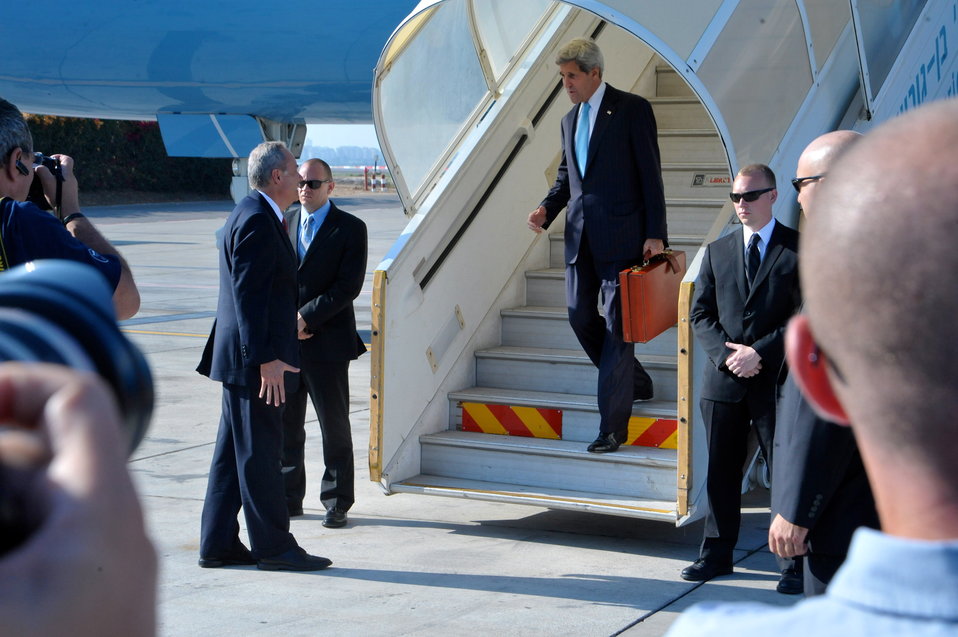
Secretary Kerry Returns to Israel

U.S. Secretary of State John Kerry is greeted by U.S. Charge d'Affaires Thomas Goldberger as he arrives at Ben Gurion International Airport in Tel Aviv, Israel, after a flight from Amman, Jordan, on June 29, 2013.